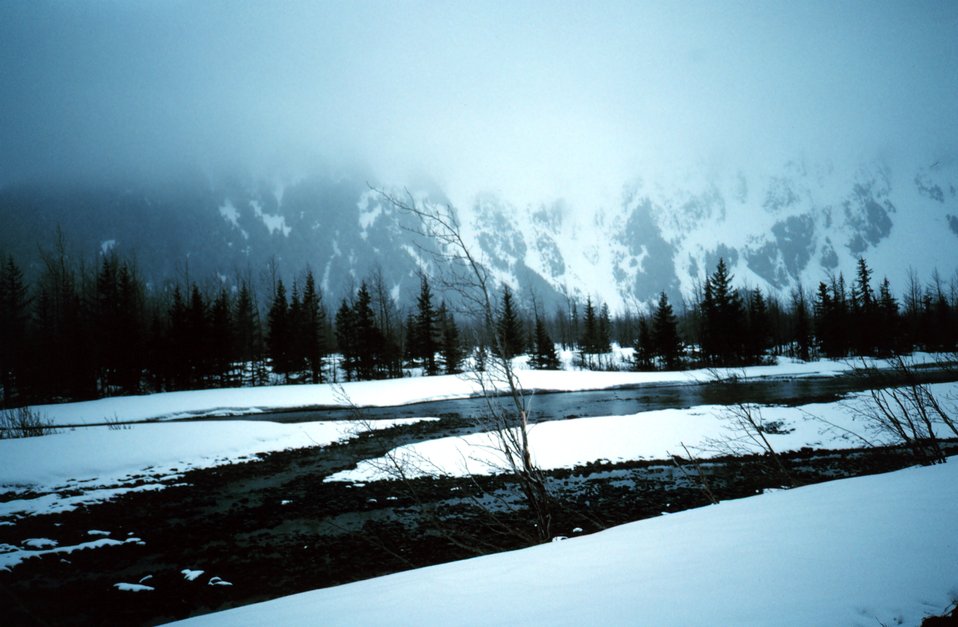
A scene along the Seward Highway